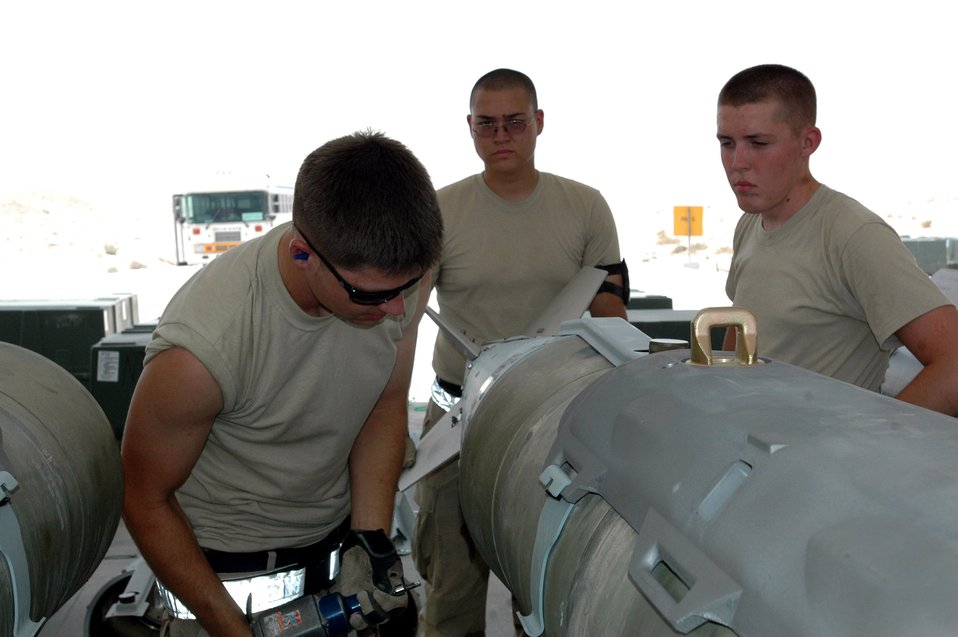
Expeditionary Airmen build bombs

Senior Airman John Neufield (left to right), Airman 1st Class Stephen Price and Airman 1st Class Carl Flores install the fins on a guided bomb unit-31. The Airmen are with the 379th Expeditionary Maintenance Squadron's ammo flight at a deployed location in Southwest Asia.